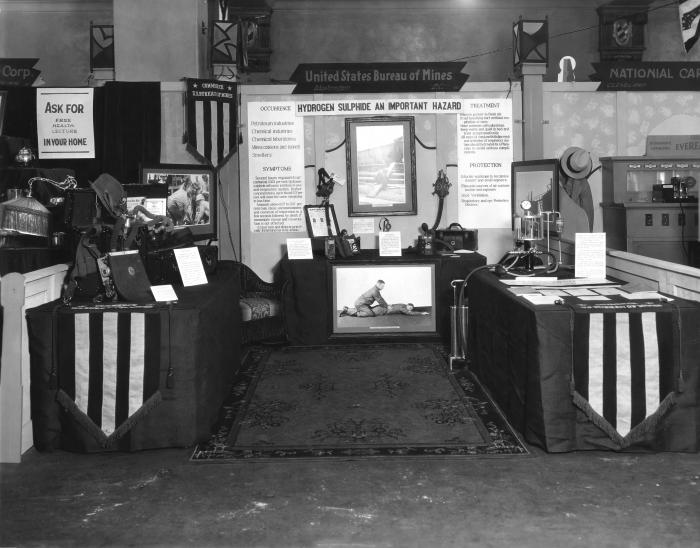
Provided by the Center for Disease Control's (CDC), National Institute for Occupational Safety and Health (NIOSH), this historic image depicted an exhibit produced by the Bureau of Mines, which was being displayed at a 1929, Portland, Oregon, American Medical Association (AMA) meeting. Note the filtered breathing masks hanging on the rear wall of the exhibit.